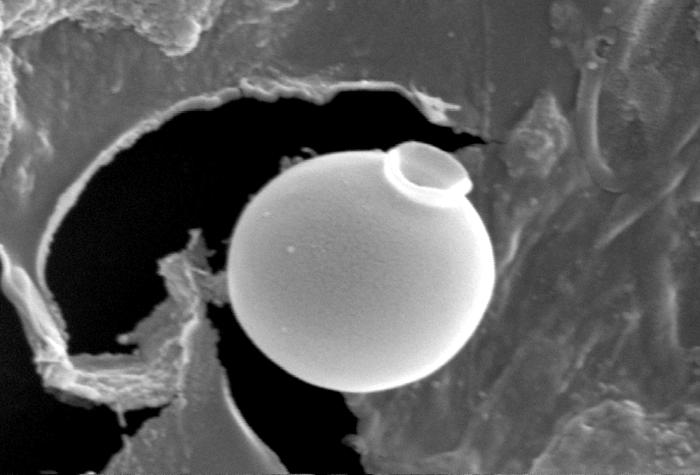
This scanning electron micrograph (SEM) of an untreated water specimen extracted from a wild stream mainly used to control flooding during inclement weather, revealed the presence of unidentified organisms, which included bacteria, protozoa, and algae. Clearly visible in the center of this image, was a exquisitely-formed unidentified round vescicle-shaped microorganism, which may have been algal, or diatomic. Shaped like an ancient Grecian urn, the almost perfectly rounded smooth, flawless surface was made even more beautiful given its delicate structure. For a colorized version of this image, see PHIL 11709.